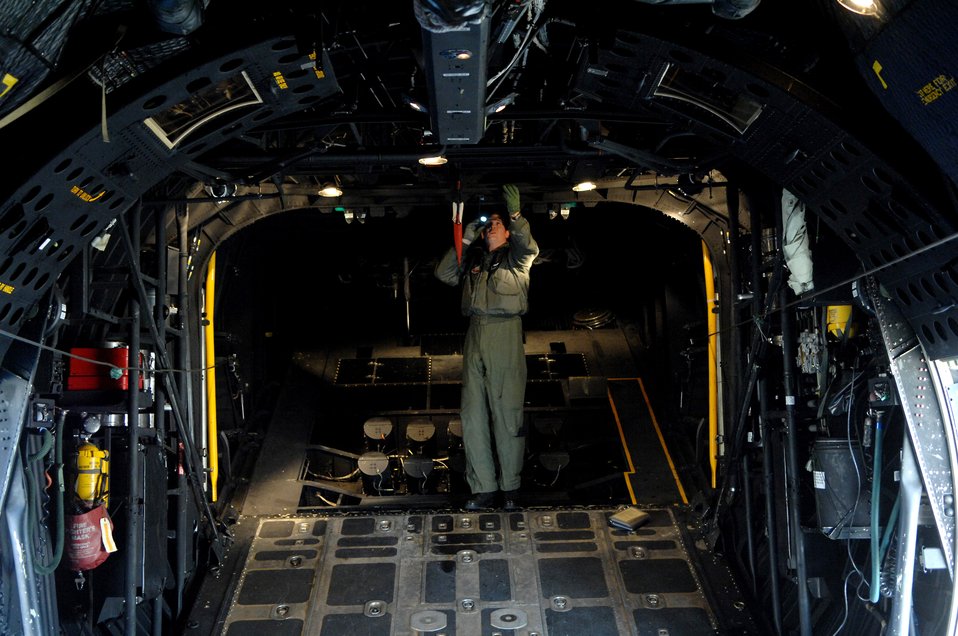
Moody muscle moves mission

Senior Airman Pat Clendenning performs preflight inspections on an HC-130P Combat King Jan. 3 at Moody Air Force Base, Ga. A thorough inspection is made of the entire aircraft before every flight to ensure crew safety. Airman Clendenning is a 71st Rescue Squadron flight engineer.